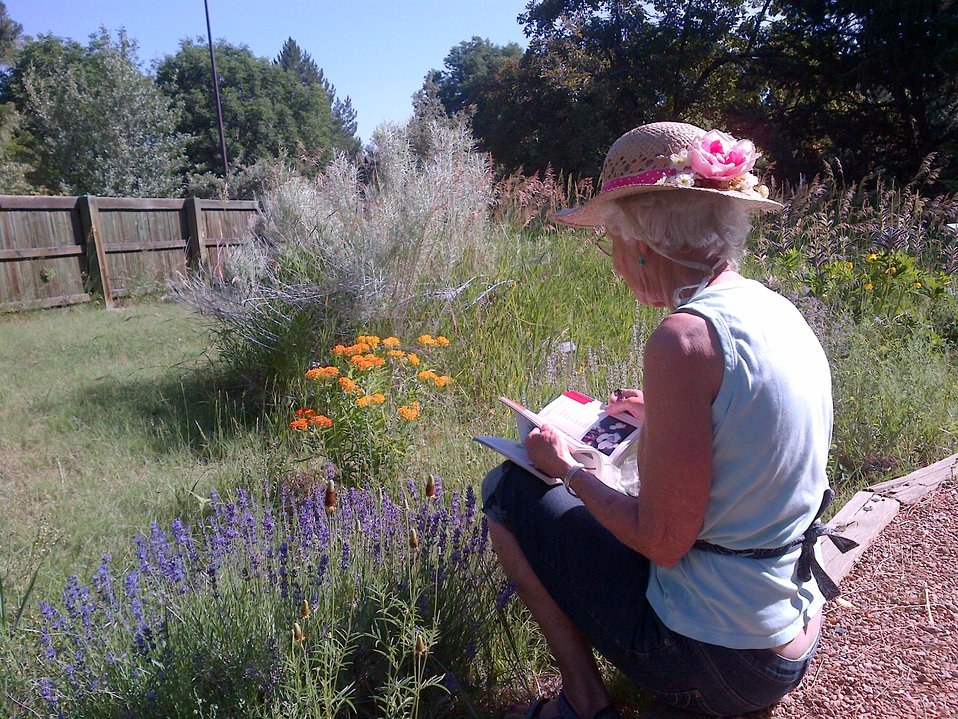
Two Ponds Flower Lady